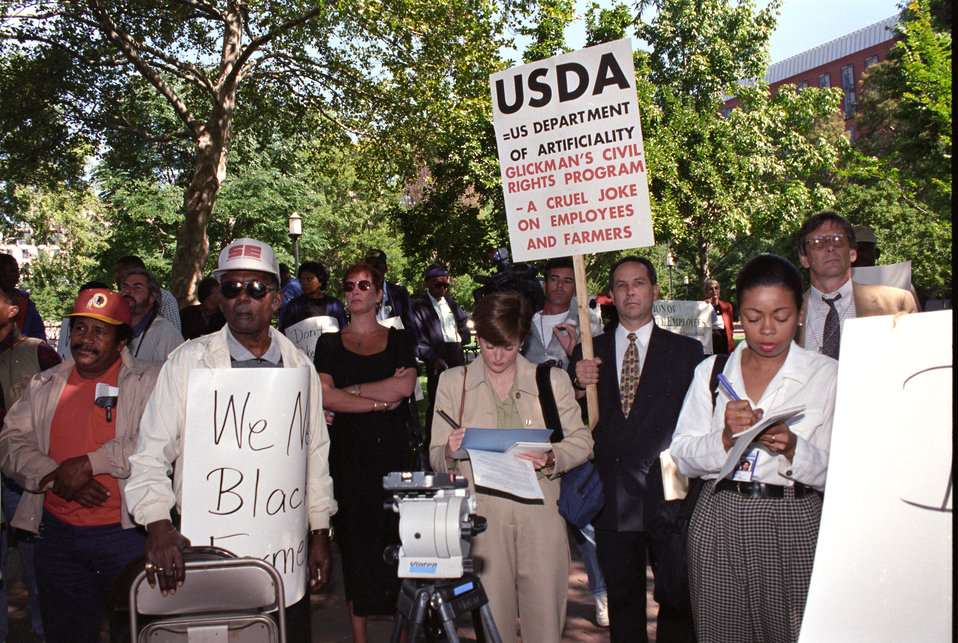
Black farmers protest at Lafayette Park across from the White House in Washington, D.C. on September 22, 1997. Protesters alleged the U.S. Department of Agriculture (USDA) denied black farmers equal access to farm loans and assistance based on their race. North Carolina farmer Timothy Pigford and 400 other black farmers filed the Pigford v. Glickman (Pigford I) class-action lawsuit against USDA in 1997. The USDA settled Pigford I in 1999.